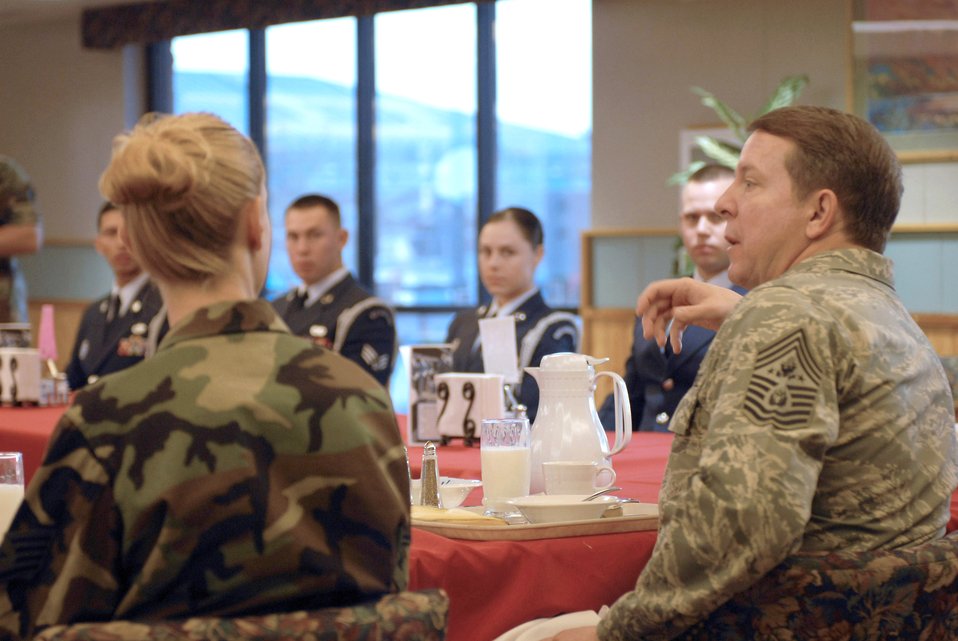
CMSAF visits Luke Airmen during Air Force Week

Chief Master Sgt. of the Air Force Rodney J. McKinley discusses various topics with Airmen during a breaksfast March 21 at Luke Air Force Base, Ariz. Chief McKinley was at Luke AFB as part of Air Force Week, which runs March 19 to 23.